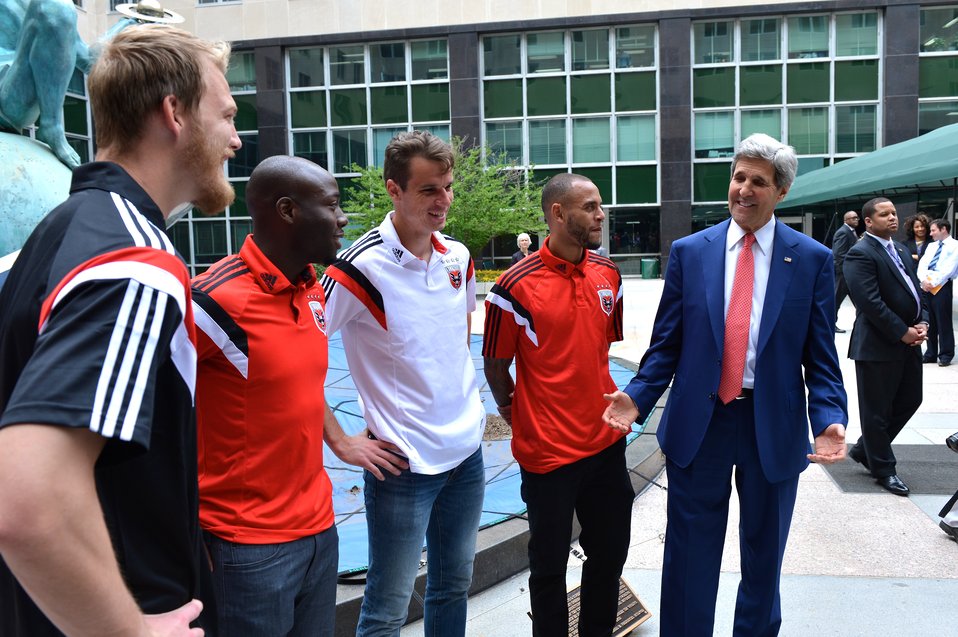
Secretary Kerry Chats With DC United Players

U.S. Secretary of State John Kerry speaks with DC United soccer players who participated in a soccer clinic with athletes from local youth soccer organizations at the U.S. Department of State in Washington, D.C., on April 14, 2014.